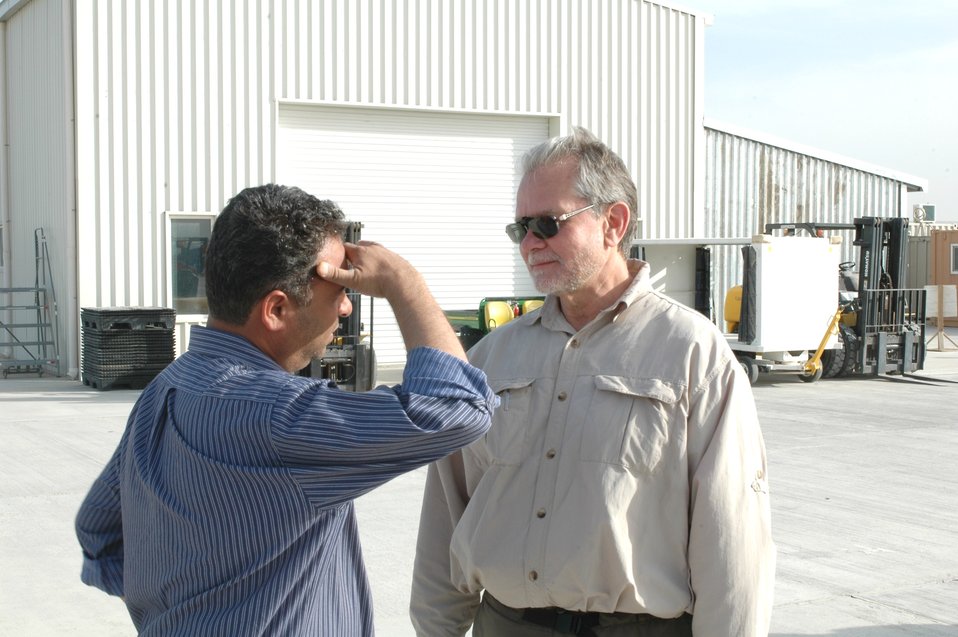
Dr Shah Visits Argandab April 10, 2010